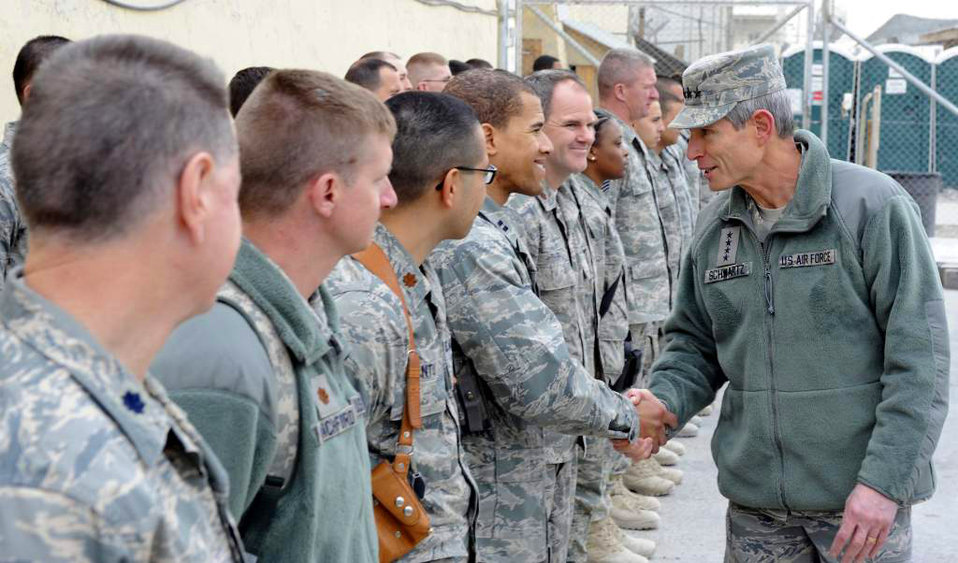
CSAF visits AFCENT bases

Air Force Chief of Staff Gen. Norton Schwartz shakes hands with Airmen Jan. 19, 2011, at Kandahar Airfield, Afghanistan. During an “all call,” the general spoke to Airmen about manning, suicide prevention, and the repeal of Don’t Ask Don’t Tell. He also answered questions from the Airmen on topics ranging from commissioning opportunities to joint expeditionary taskings.